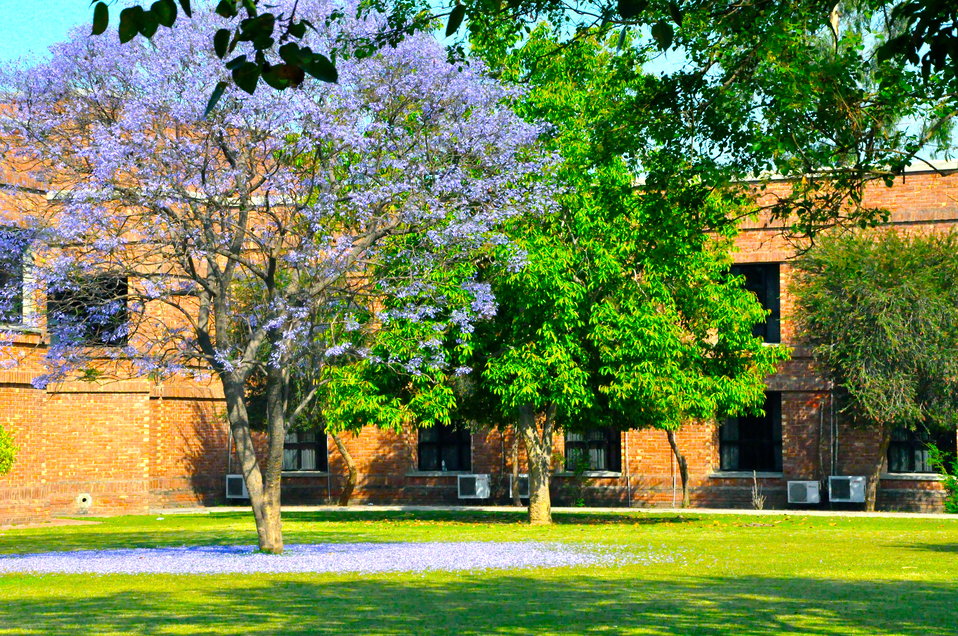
Jacaranda tree at LUMS, the conference venue